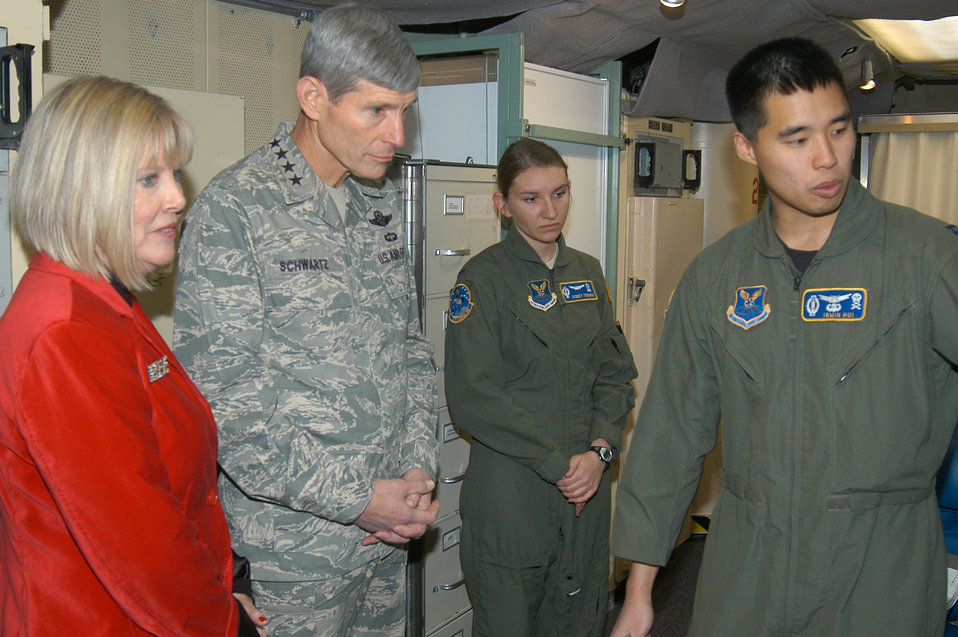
CSAF visit

Capt. Irwin Hui (right) and 1st Lt. Sydney Todorov, missile combat crewmembers with the 320th Missile Squadron at F.E. Warren Air Force Base, Wyo., brief Air Force Chief of Staff Gen. Norton Schwartz and Mrs. Schwartz Dec. 25, 2009, inside the launch control center of a missile alert facility. The general and Mrs. Schwartz visited the base during Christmas to thank Airmen in 24-hour work centers and to reinforce the Air Force's commitment to the nuclear enterprise.